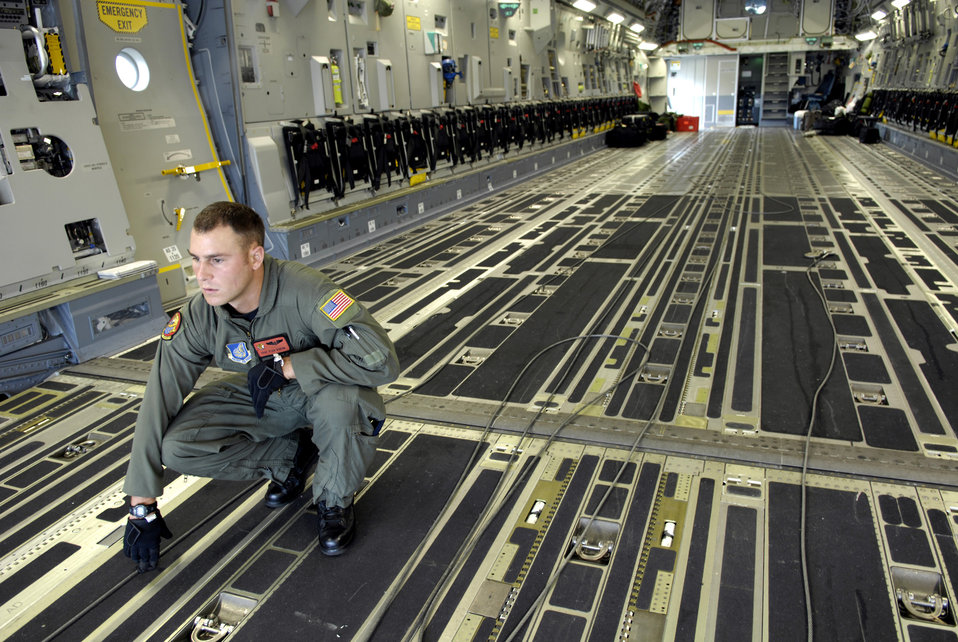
C-17 reaches dry dock

Staff Sgt. Ryan Boehm visually lines up shoring to the ramp of his C-17 Globemaster III Dec. 2 at Hickam Air Force Base, Hawaii, in preparation for loading a dry dock transport vehicle. The flight was the first operational movement of a dry dock transport by a C-17. Sergeant Boehm is a loadmaster assigned to the 535th Airlift Squadron.